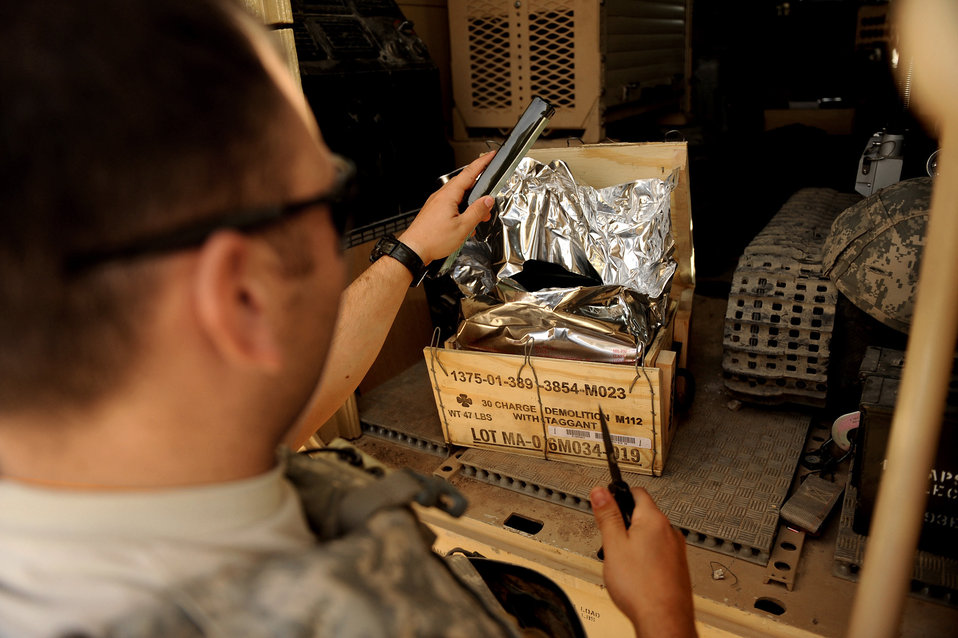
Explosive ordnance Airmen clear the way for Afghan National Army

Staff Sgt. Benjamin Stewart opens a box of C-4 explosives that will be used to destroy M-42 bomblets June 4, 2010, in Kandahar City, Afghanistan. Sergeant Stewart is an explosive ordnance disposal technician assigned to the 755th Air Expeditionary Squadron, Operating Location-Bravo explosive ordnance disposal team.